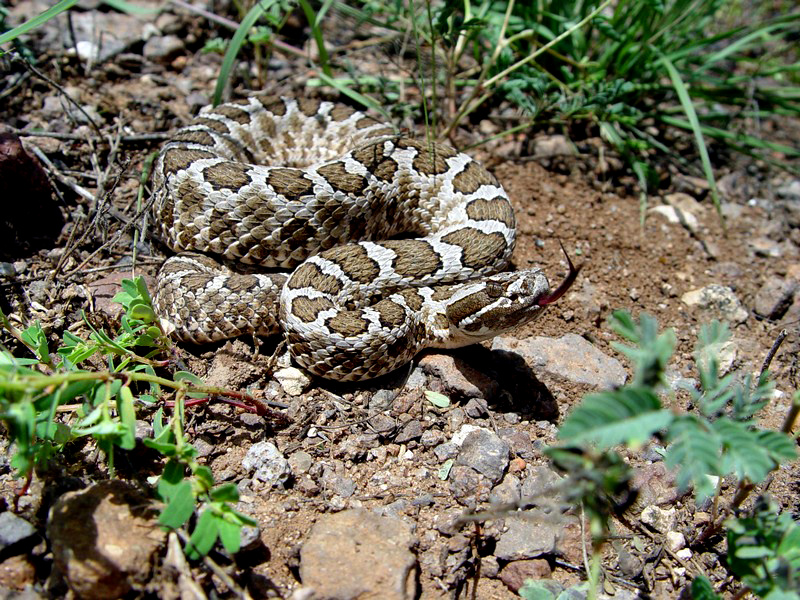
This image depicted a 'desert Massasauga' rattlesnake, Sistrurus cantenatus edwardsi, which is distinguished from its western cousin only by its slightly lighter ground color, fewer dorsal blotches, and the lack of gray mottling on the ventral scute. Along the South Texas Gulf Coast, the desert massasauga ranges from the city of Palacios, southward along the coast and its barrier islands, and westward throughout most of the South Texas brush country (Price;Tennant, 1998), placing it in hurricane-prone areas, which is of importance to those living in these regions, and first-responders offering aid to those affected by such a disaster. The name 'desert massasauga' is actually misleading, because this species inhabits dry short grass prairie, mesquite/prickly pear savannah, and grass covered sand dune areas over much of its range (Tennant, 1998).